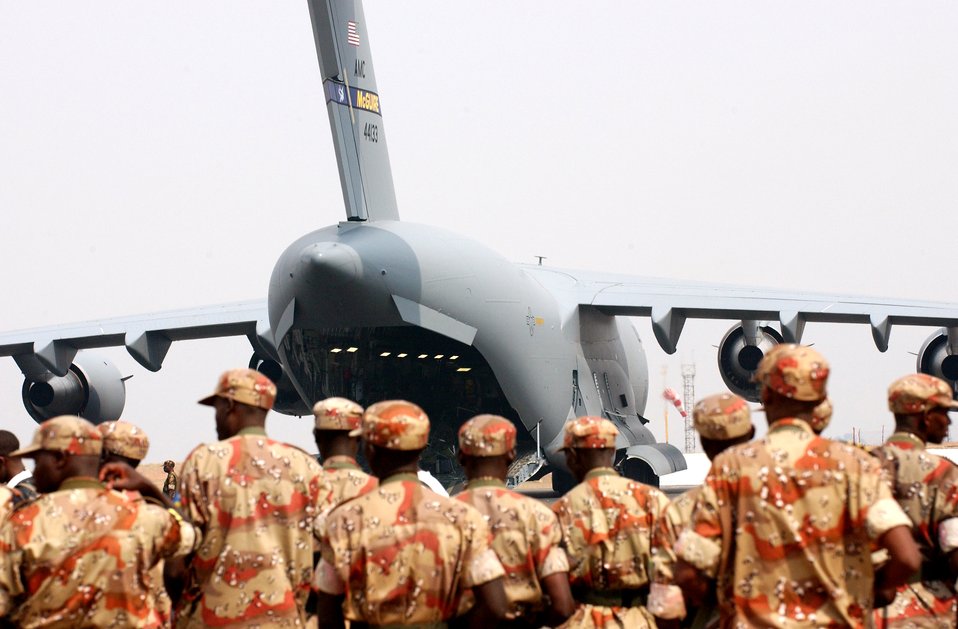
USAFE helps Rwandan troops deploy to Darfur

KIGALI INTERNATIONAL AIRPORT, Rwanda -- Rwandan forces prepare to board a C-17 Globemaster III from McGuire Air Force Base, N.J., on July 17. The United States is providing transportation for 1,200 Rwandan forces to Sudan as part of NATO's response to support the African Union's expanded peacekeeping mission in Darfur with logistics and training.